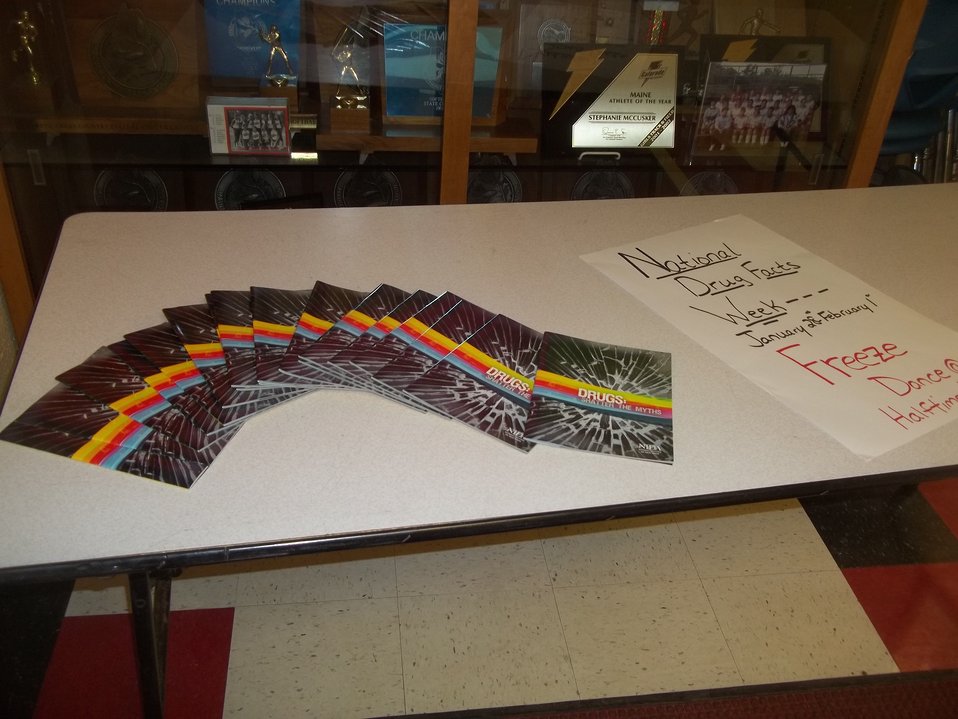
Lisbon, Maine's NDFW 2013

Lisbon, Me. Students from Lisbon High School SADD group held NDFW Event during halftime show, displaying posters, 'Shatter the Myths' books and stickers.